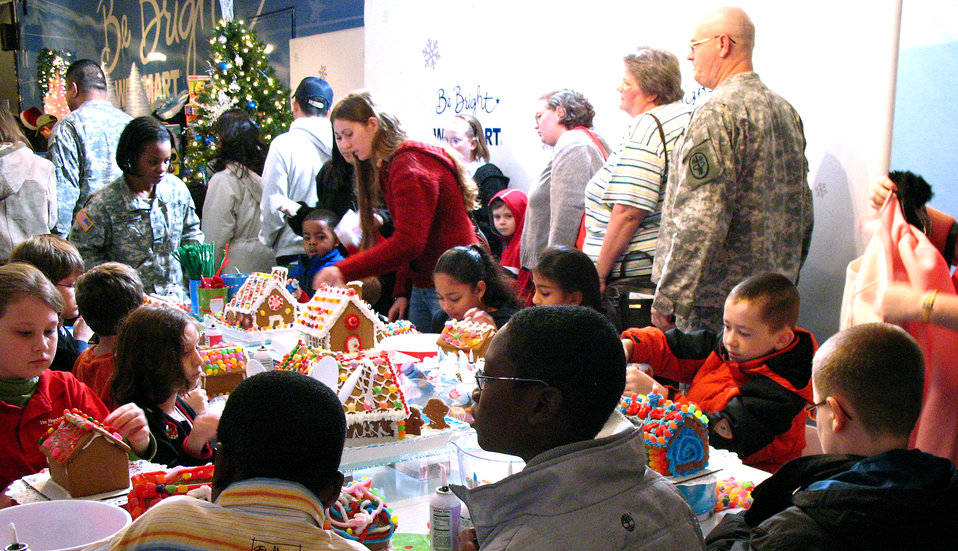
Operation Christmas

Military families build gingerbread houses during Operation Christmas Dec. 13 at the Texas National Guard Armory in San Antonio. Operation Christmas is an outreach program designed to show support to military families during the holiday season.